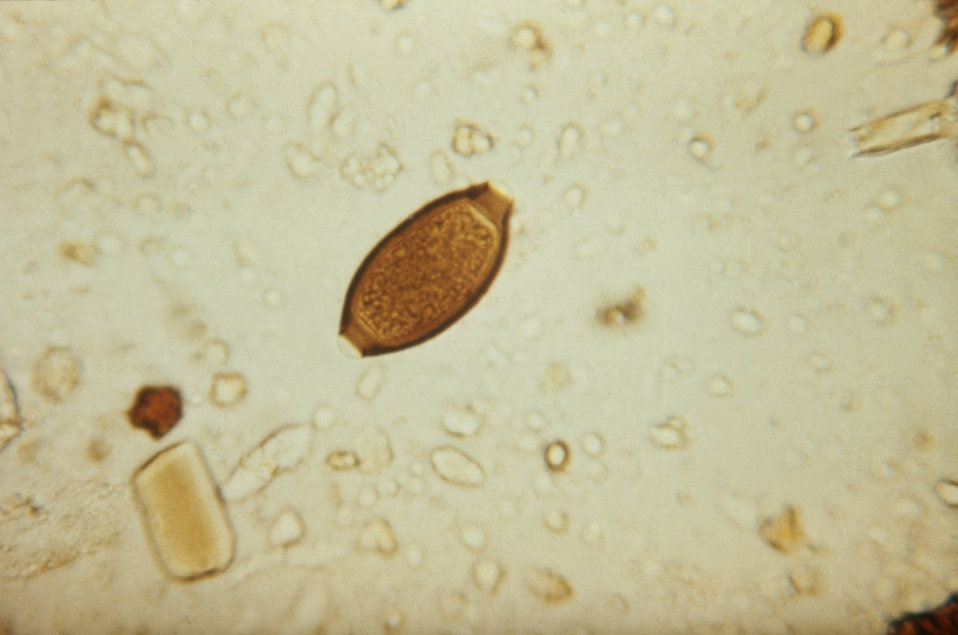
This micrograph depicts an egg from the 'human whipworm', Trichuris trichiura, the causal agent of 'Trichuriasis'.